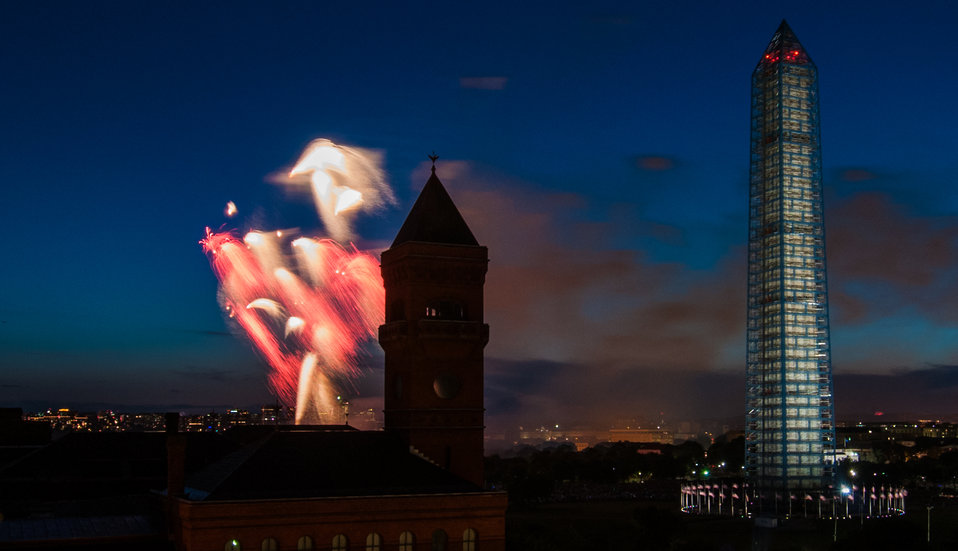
4th of July fireworks as seen from the U.S. Department of Agriculture (USDA) headquarters building, with the USDA Forest Service Yates Building in the foreground, left, and the Washington Monument in Washington, D.C., on July 4, 2013.